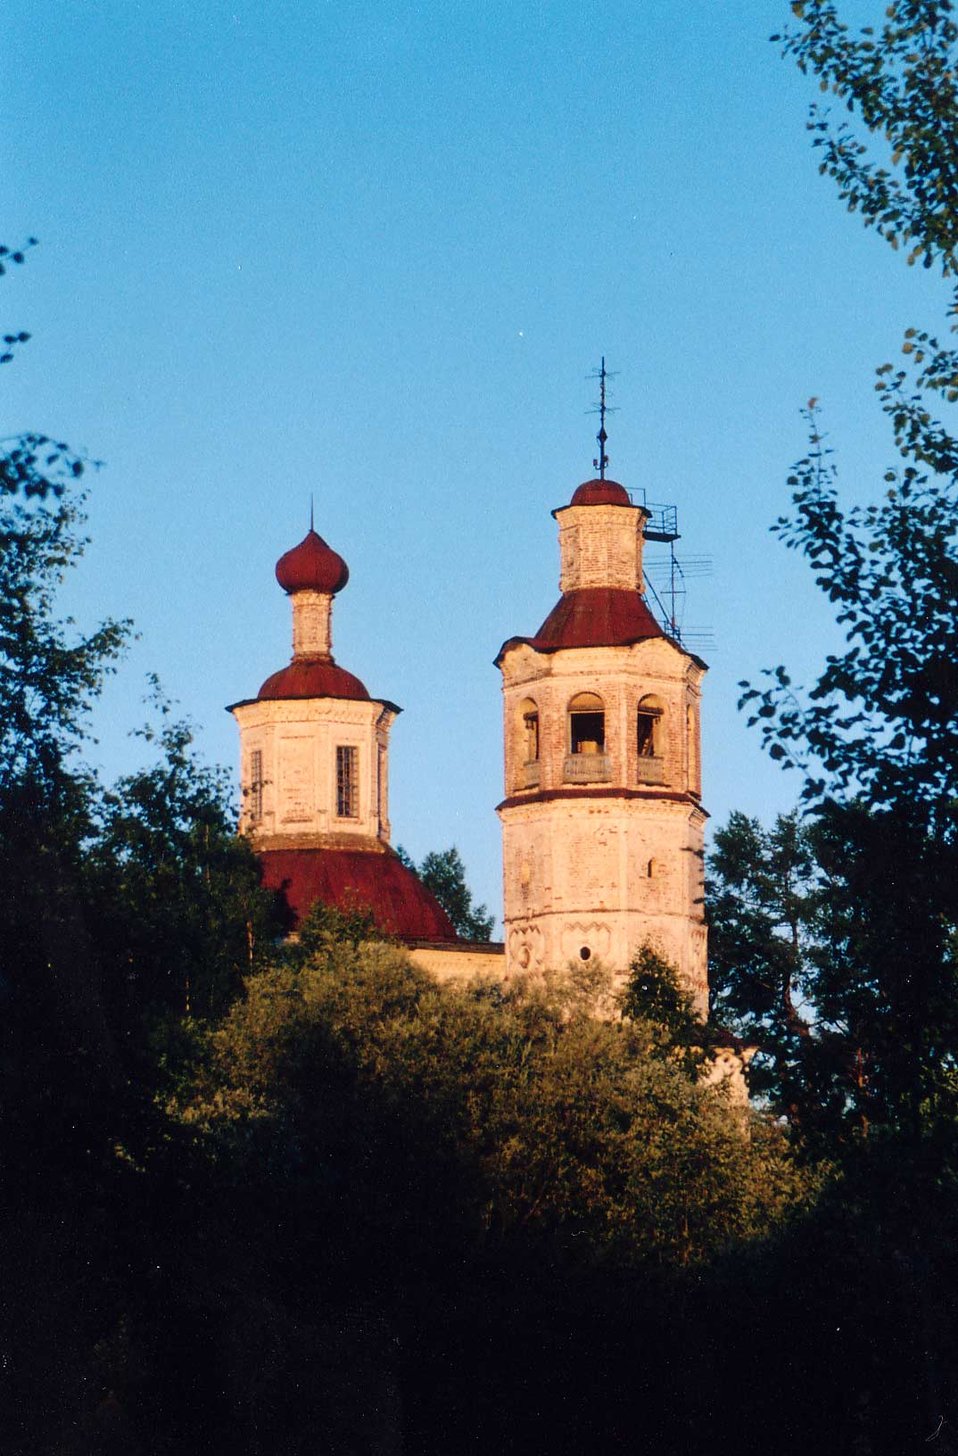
Yarensk Cathedral Русский: Спасо-Преображенский собор, с.Яренск